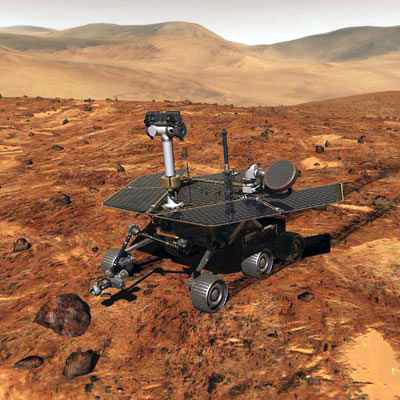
Mars Rover Spirit lands

FILE ART -- Mars Rover Spirit, currently on the red planet, used a radiation-resistant computer to guide it to a safe landing Jan. 4. The computer was developed by experts at the Air Force Research Laboratory at Kirtland Air Force Base, N.M.